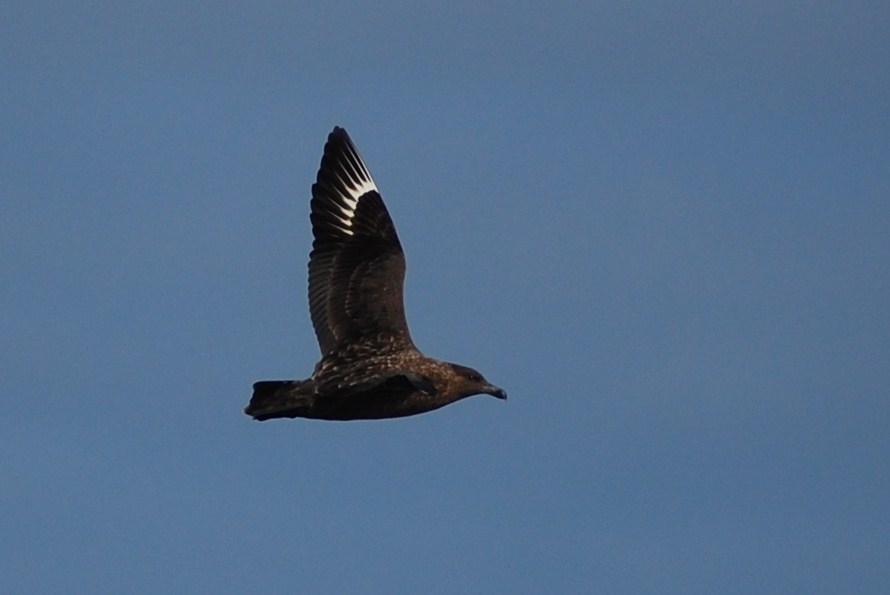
Skua.